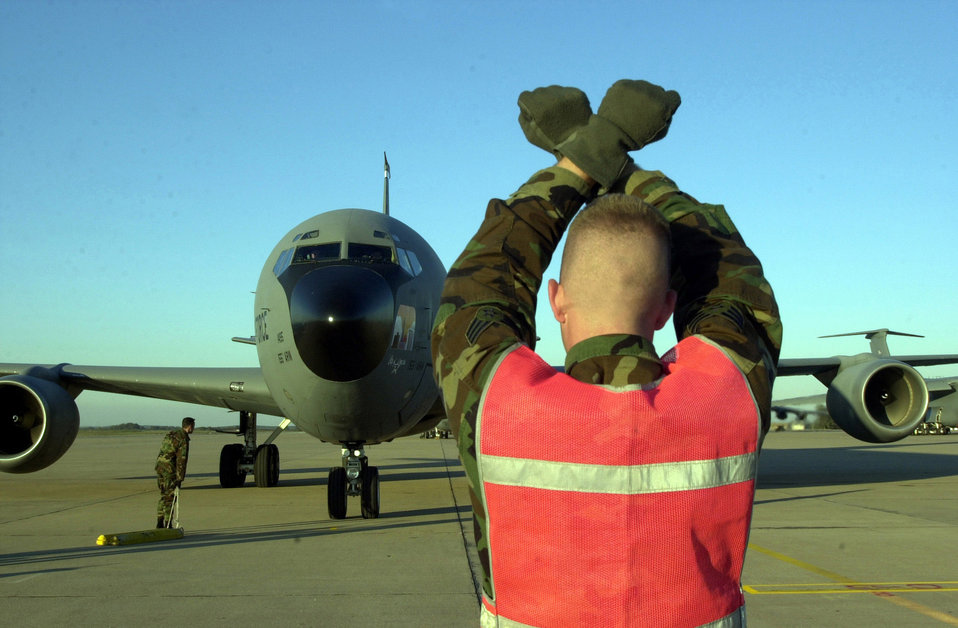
Hold here

OPERATION ENDURING FREEDOM -- Senior Airman Dan Westman marshals in a KC-135R Stratotanker aircraft on the flightline at an operating location in support of Operation Enduring Freedom. Air Force tankers, such as the KC-135, have flown more than 2,500 air refueling missions for Air Force and Navy aircraft engaged in OEF.